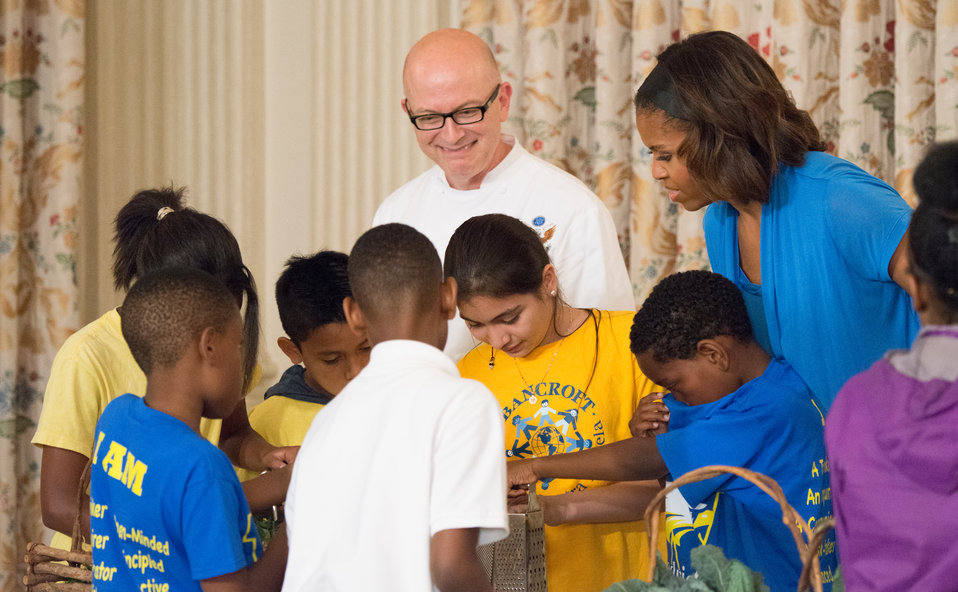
White House Chef Bill Yosses and First Lady Michelle Obama and join Washington, D.C. students from Cleveland Elementary School, Friendship Public Charter School, Kimball Elementary School, Bancroft Elementary School, Harriet Tubman Elementary School, who helped plant the garden in the spring, make lunch from this year’s summer crop with the help of White House chefs and visiting school nutrition directors from Orlando, FL, Dallas, TX, and West Virginia in the State Dining Room of the White House in Washington, D.C. on Thursday, Jun. 12, 2014.